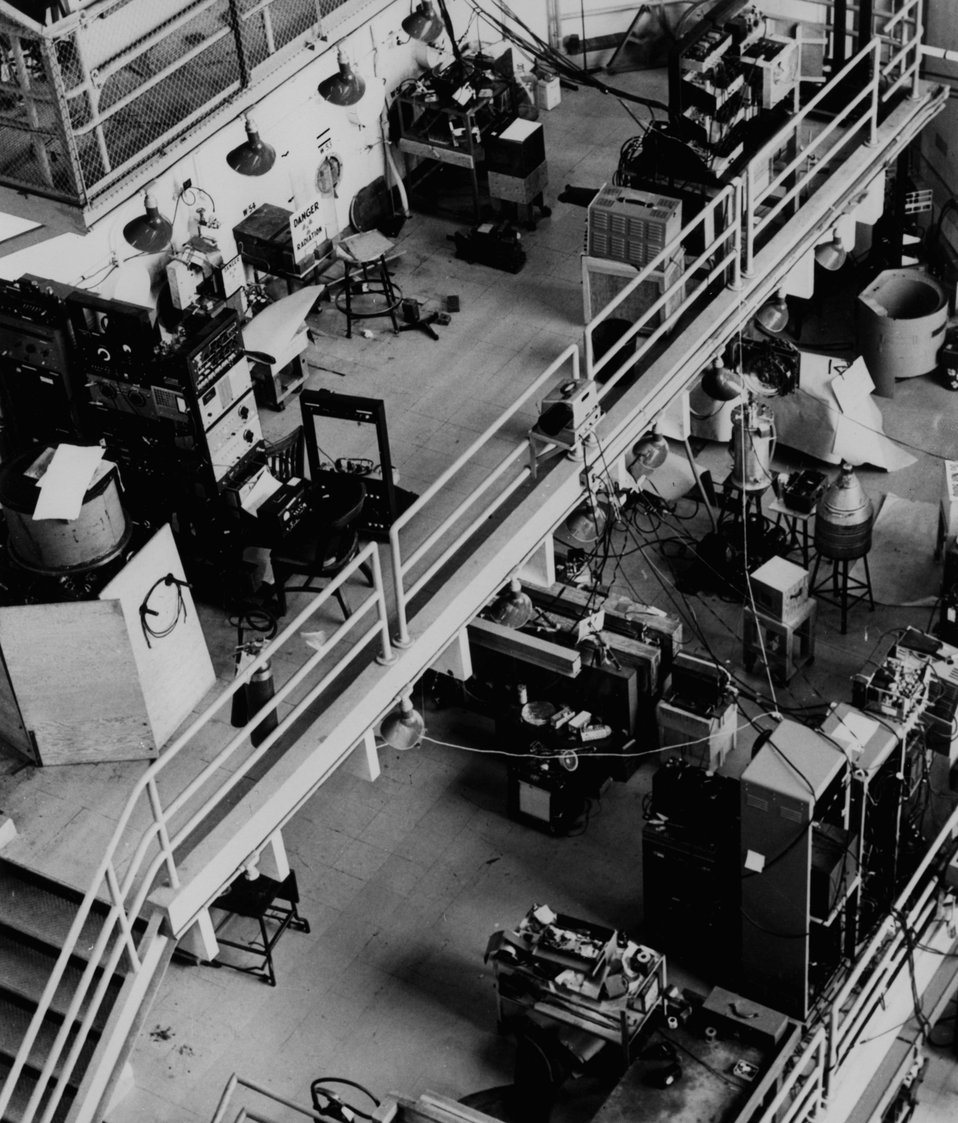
Latest view of the west face of the Brookhaven reactor, showing research equipment placed to utilize beams of neutrons which emerge from ports in the face. c. 1953